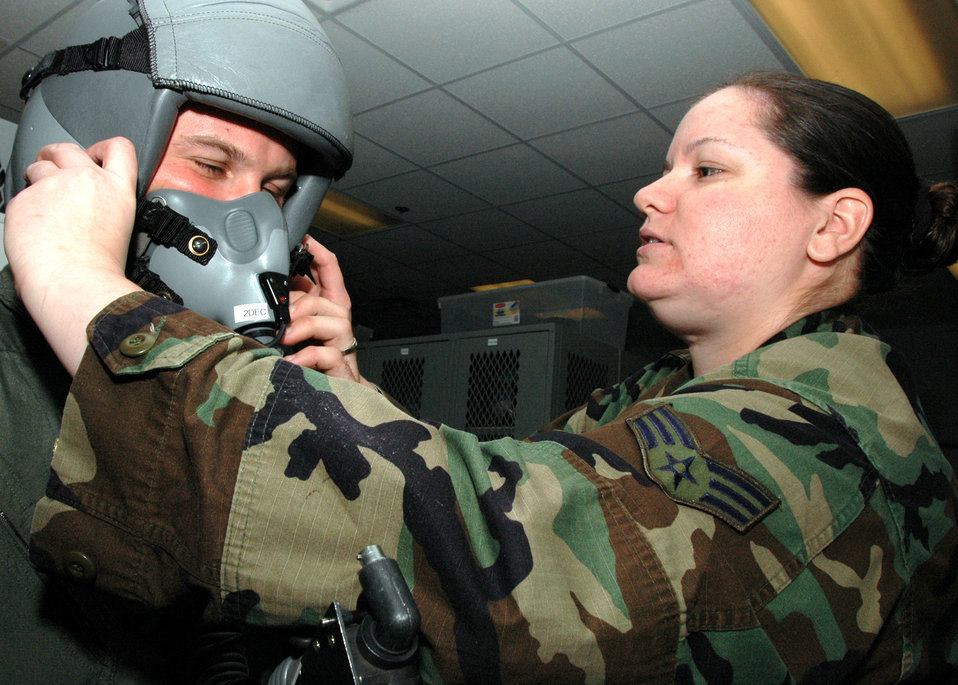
BUFF flyers

BARKSDALE AIR FORCE BASE, La. (AFPN) -- Senior Airman Stephanie Ragan helps 2nd Lt. Andrew Bauer fit test a helmet. Lieutenant Bauer performed an oxygen mask test to make sure there are no leaks in the mask. If a mask leaks during a flight, the aircrew member wouldn't receive enough oxygen which could lead to hypoxia